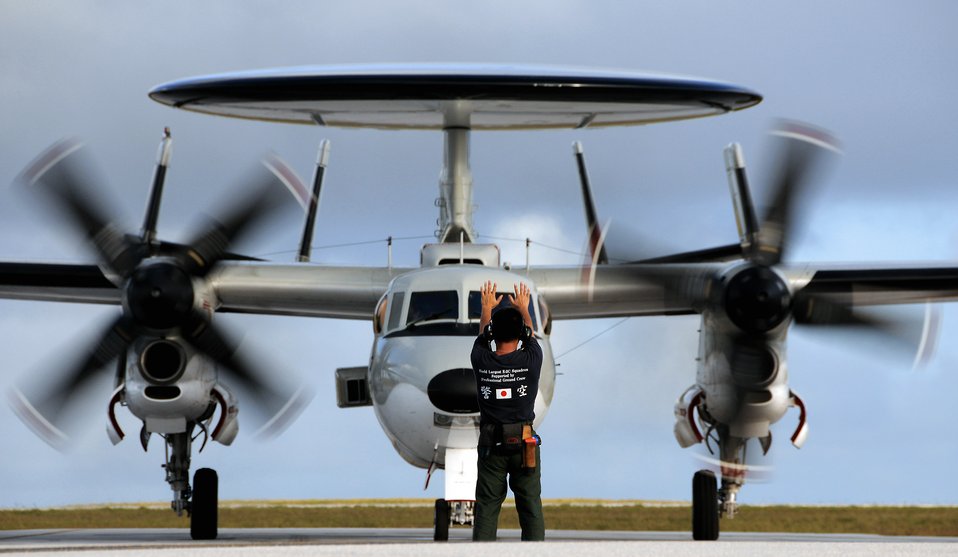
Cope North 09-1

The crew of a Japan Air Self Defense Force E-2C Hawkeye at Andersen Air Force Base, Guam, for a Cope North exercise, starts its engines Feb. 4 for a familiarization flight. This is the 10th time that Cope North has been held on Andersen AFB, and the fourth time that the JASDF will use live ordnance since the first exercise, in 1978.